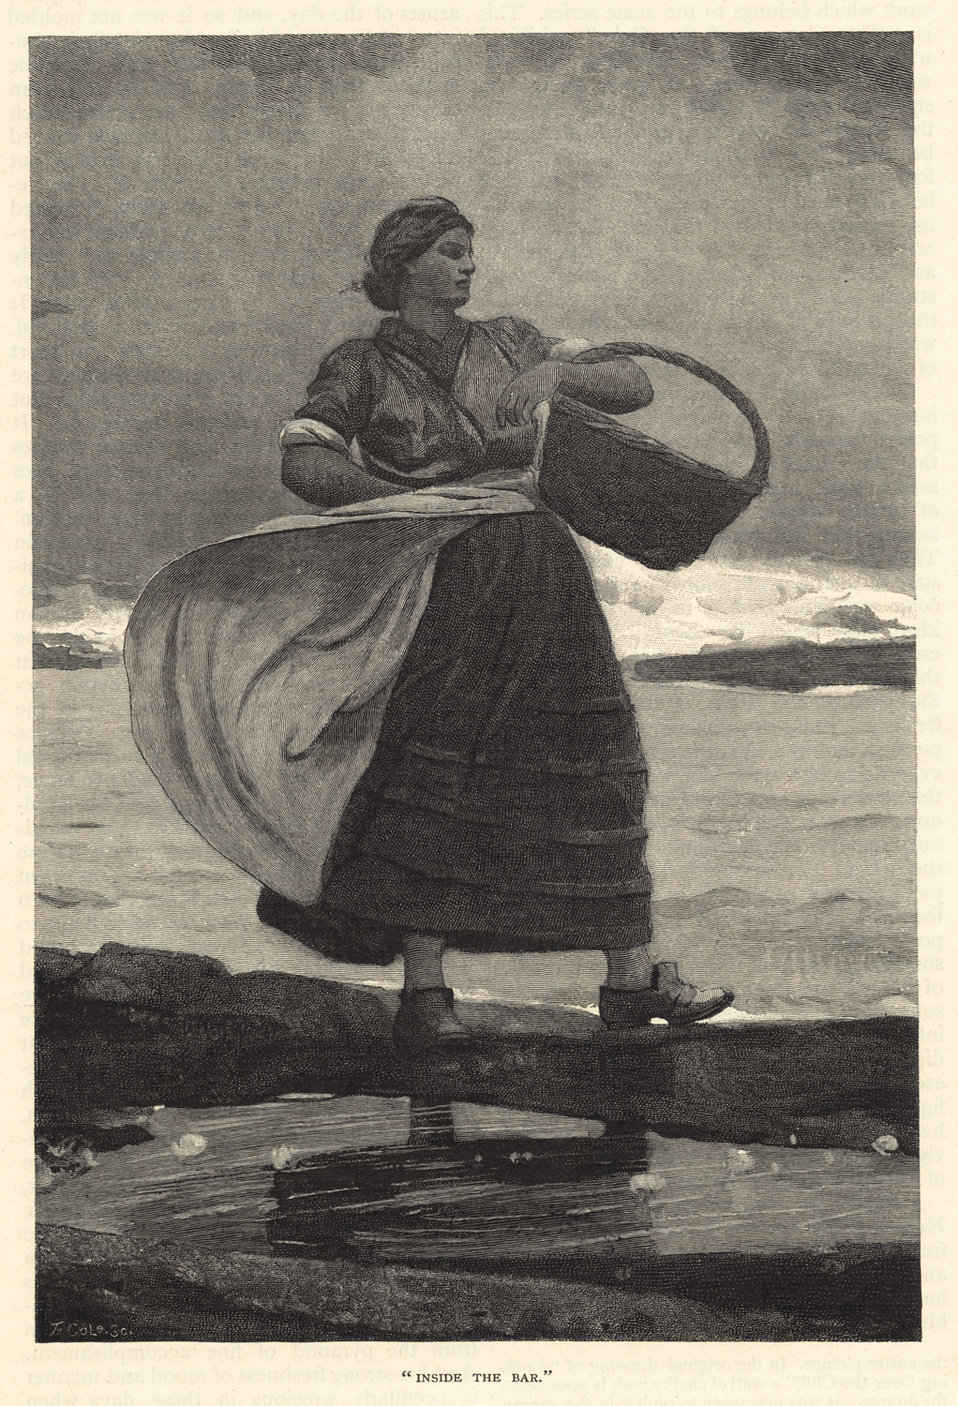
File name: 10 09 000160 Title: 'Inside the bar.' Creator/Contributor: Homer, Winslow, 1836-1910 (artist) Date issued: 1883-11 Physical description: 1 print : wood engraving Genre: Wood engravings; Periodical illustrations Notes: Published in: Scribner's Monthly, Volume XXVII, November 1883, p. 20.; Signed lower left: T. Cole Sc. Collection: Winslow Homer Collection Location: Boston Public Library, Print Department Rights: No known restrictions
Flickr data on 2011-08-11: Camera: Epson Exp10000XL10000 Tags: Winslow Homer User: Boston Public Library BPL